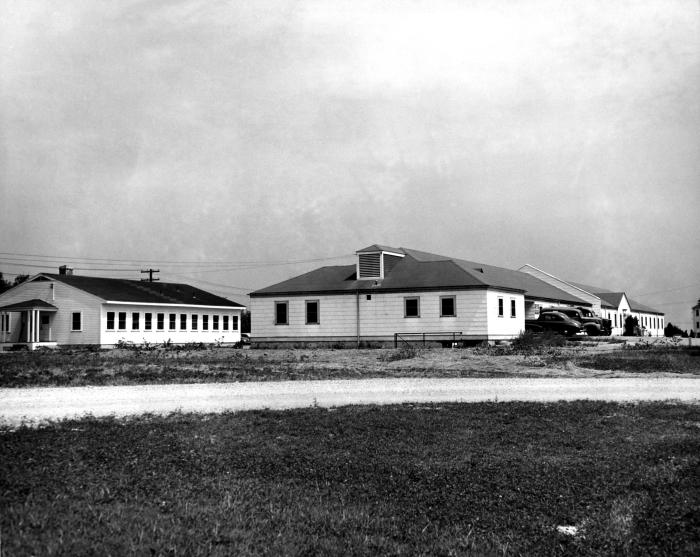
Provided by the Center for Disease Control's (CDC), National Institute for Occupational Safety and Health (NIOSH), this historic 1943 image depicted the exterior of an Ohio TNT military ordnance manufacturing plant's hospital facility. Workers inside the plant who'd been exposed to the toxic substance trinitrotoluene, were immediately treated in this on-site medical center. Poisoning took place when the TNT became airborne through its volatility, or through the inhalation of contaminated dust particulates, as well as when the substance came into accidental contact with the skin. A poisonous chemical, TNT will irritate the skin upon contact, and actually will change the skin's color to a bright yellow-orange. Prolonged exposure leads to liver damage, anemia, enlargement of the spleen, and a compromised immune system, to name a few of its negative effects. Trinitrotoluene is also a known carcinogen.